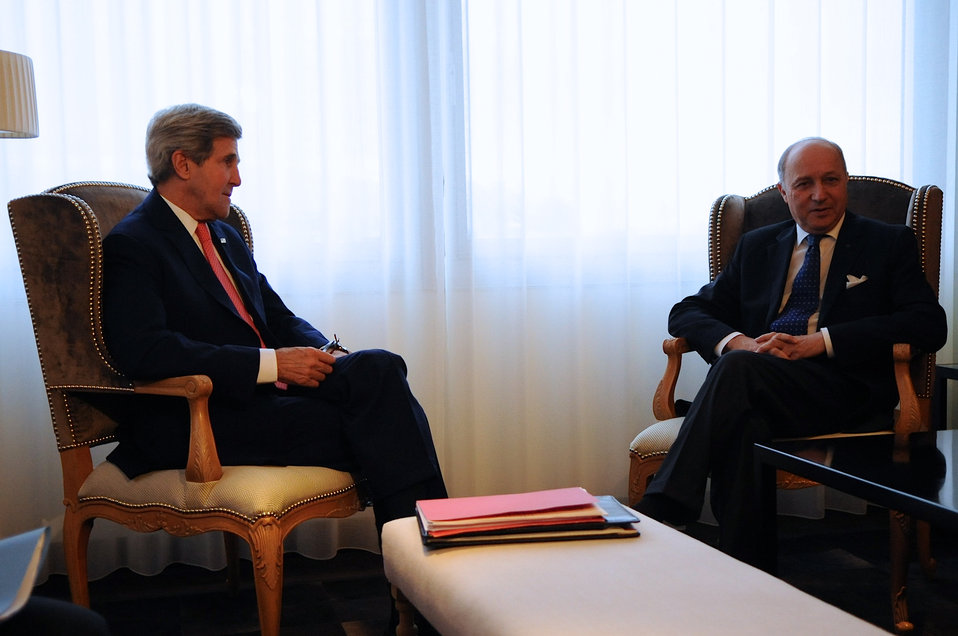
Secretary Kerry Meets With French Foreign Minister Fabius in Geneva

U.S. Secretary of State John Kerry sits with French Minister Laurent Fabius before a bilateral meeting on the margins of talks focused on Iran's nuclear capabilities, Geneva, Switzerland, November 23, 2013.